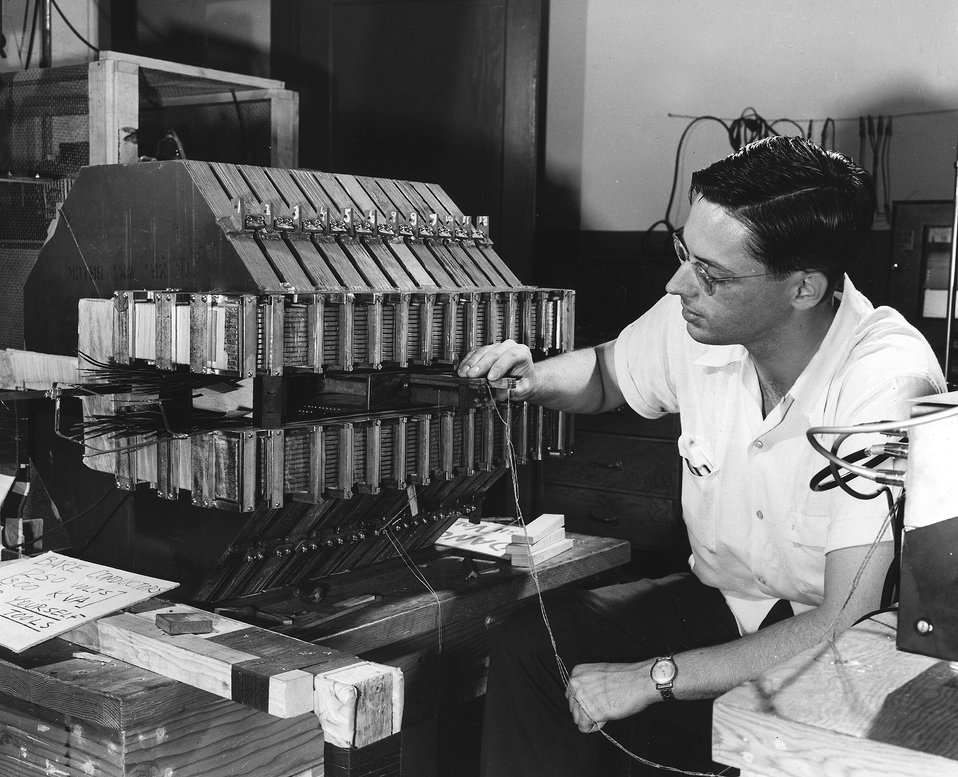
Quarter scale model - Mark IV of Cosmotron magnet set-up for measurements of the effects of pole face winding's. (Personnel - W. French). c. 1949